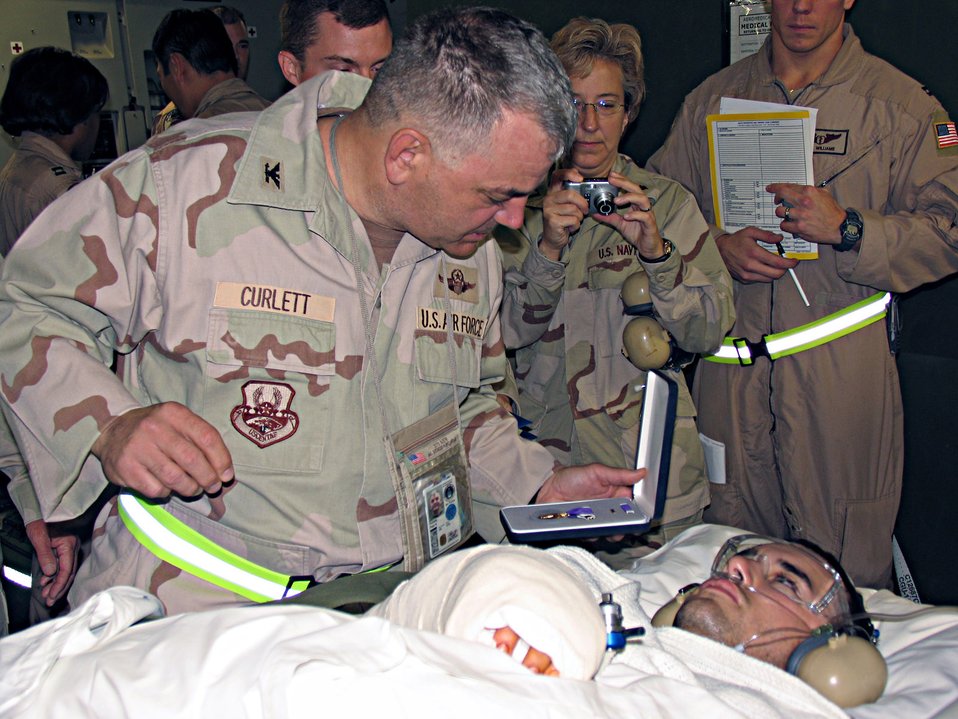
Purple Heart

Colonel Paul Curlett, 386th Air Expeditionary Wing commander, presents Airman 1st Class Brandon Byers, 586th Expeditionary Security Forces Squadron Area Security Operations gunner, with a Purple Heart for injuries he received Oct. 16 when an improvised explosive device exploded during a mounted patrol.